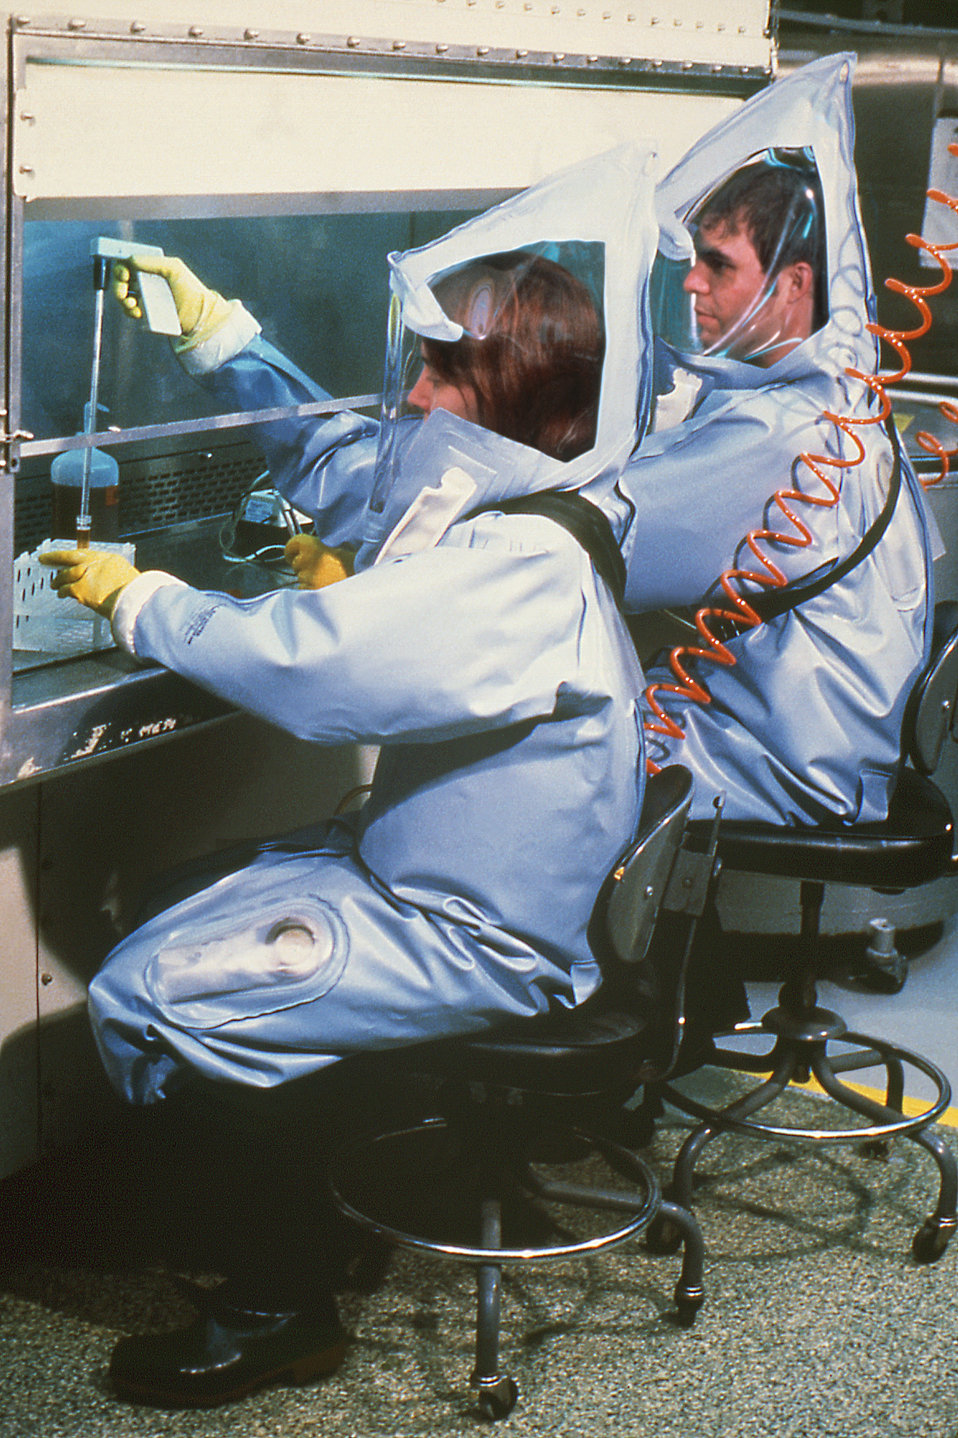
This image depicts two Centers for Disease Control laboratorians, Luanne Elliot and Dave Auperin, as they were working under a flow hood inside one of the CDC's BSL-4 (Bio Safety Lab) laboratories.